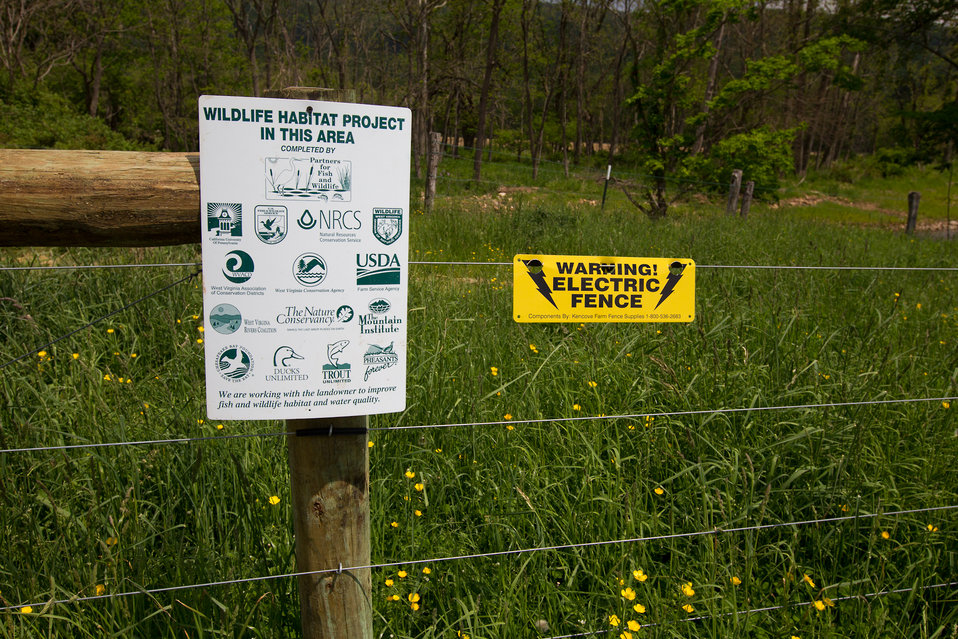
Celebrating 1 Million Feet of Conservation Fence in WV

Partners for Fish and Wildlife Program